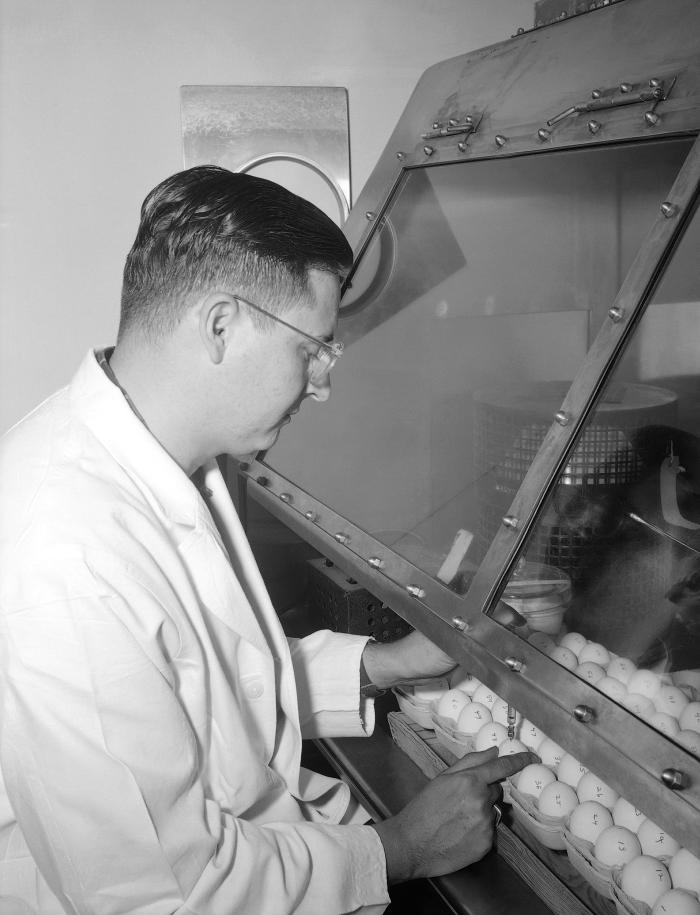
This historic image depicted Dr. Hersey, Capt., U.S.A.F., as he was conducting an infectivity study, using embryonated chicken eggs, and implementing the yolk sac inoculation method, in order to introduce infected tissue culture fluid into each egg. The purpose of the experiment was to test whether or not Rickettsial organisms would grow in this specific tissue cultue system.